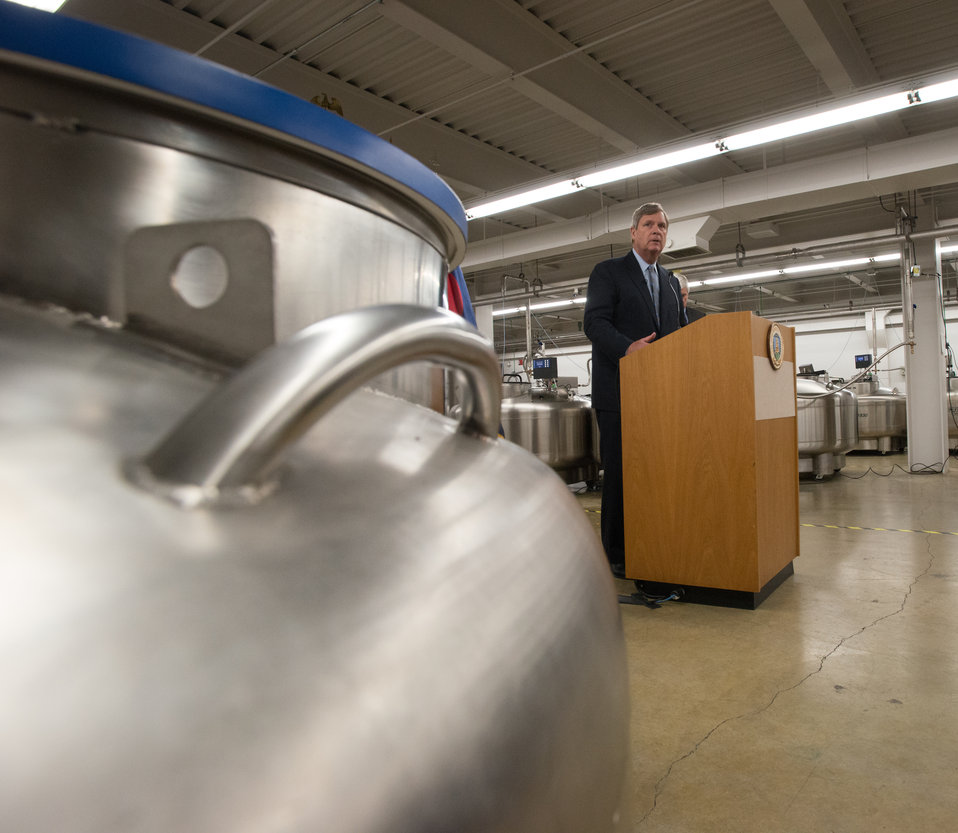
Agriculture Secretary Tom Vilsack speaks to staff and media at the U.S. Department of Agriculture's (USDA) Agricultural Research Service (ARS) National Center for Genetic Resources Preservation (NCGRP) in Ft. Collins, CO on Wednesday, Nov. 6, 2013. NCGRP is the largest agricultural gene bank facility in the U.S. The NCGRP staff conducts groundbreaking research to develop more efficient and effective means for preserving plant and animal germplasm, and for better understanding the genetic structure of these invaluable materials. Gene banks around the world have adopted the research findings, preservation techniques, and specialized technology developed by the NCGRP: many international scientists travel to the NCGRP for research and training.